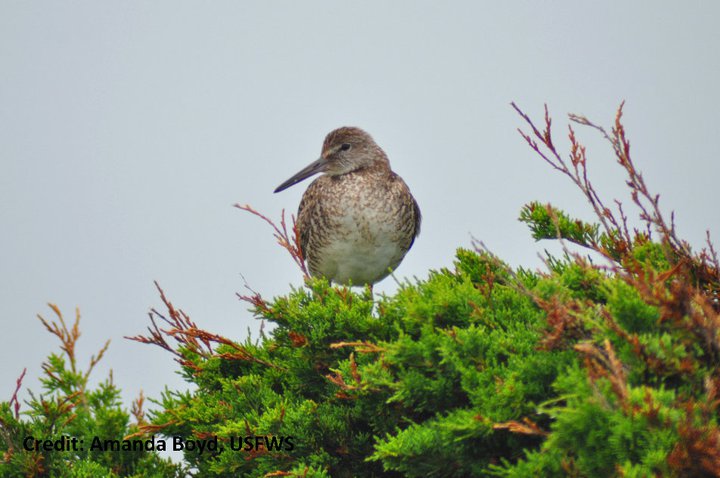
Willet

A willet the Nantucket National Wildlife Refuge, MA.